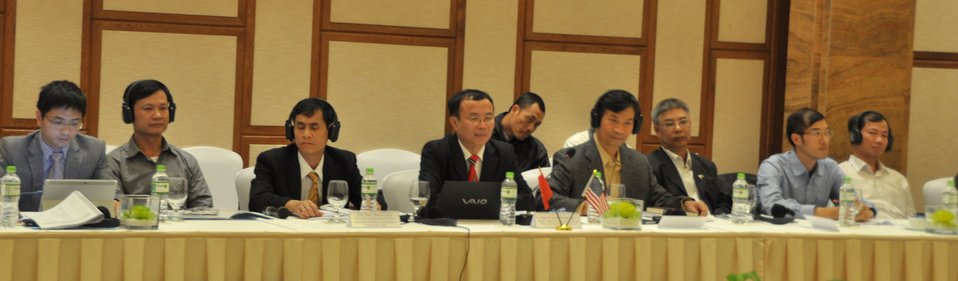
8th Annual JAC Meeting

Danang, December 4, 2013.